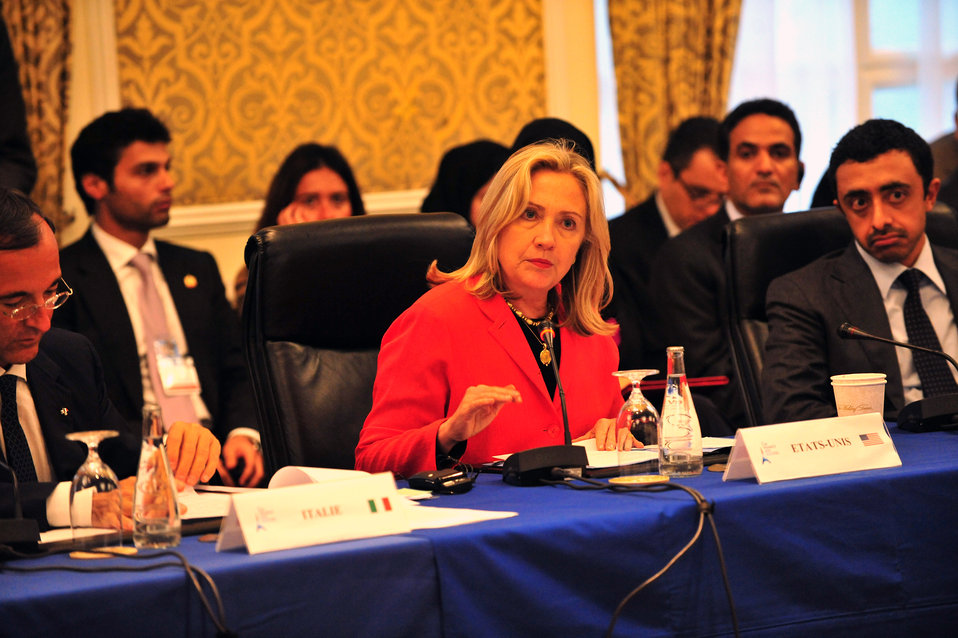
Secretary Clinton Participates in the G8 Deauville Partnership Meeting

U.S. Secretary of State Hillary Rodham Clinton participates in the G8 Deauville Partnership Meeting at the InterContinental Hotel in New York, New York, on September 20, 2011.